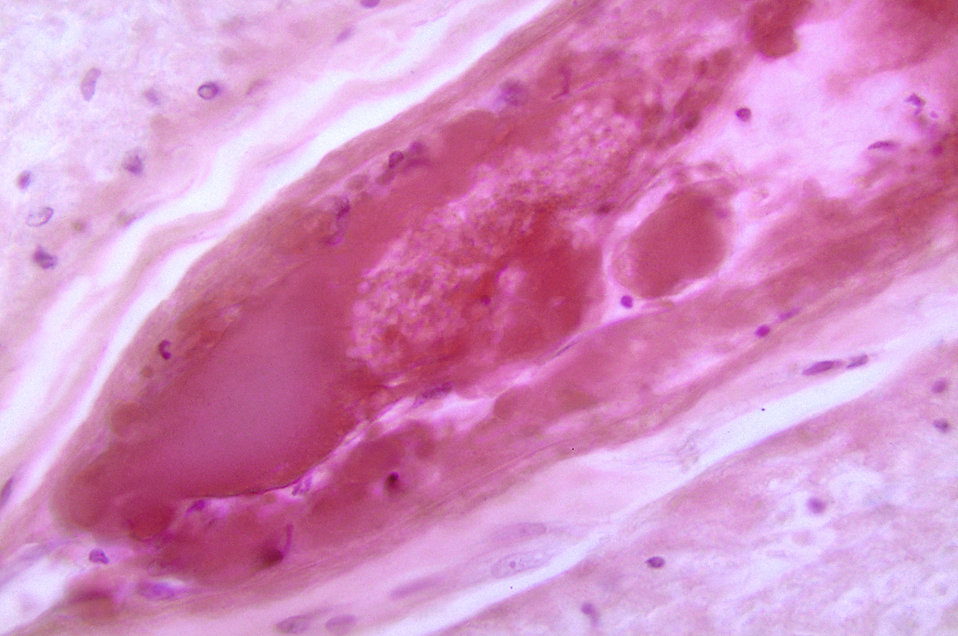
A photomicrograph of the lumbar spinal cord depicting an infarct due to Polio Type III surrounding the anterior spinal artery.